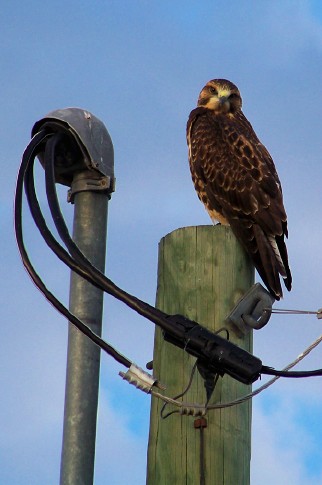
Swainson's hawk perched above the Bear River Migratory Bird Refuge parking lot in August 2010.